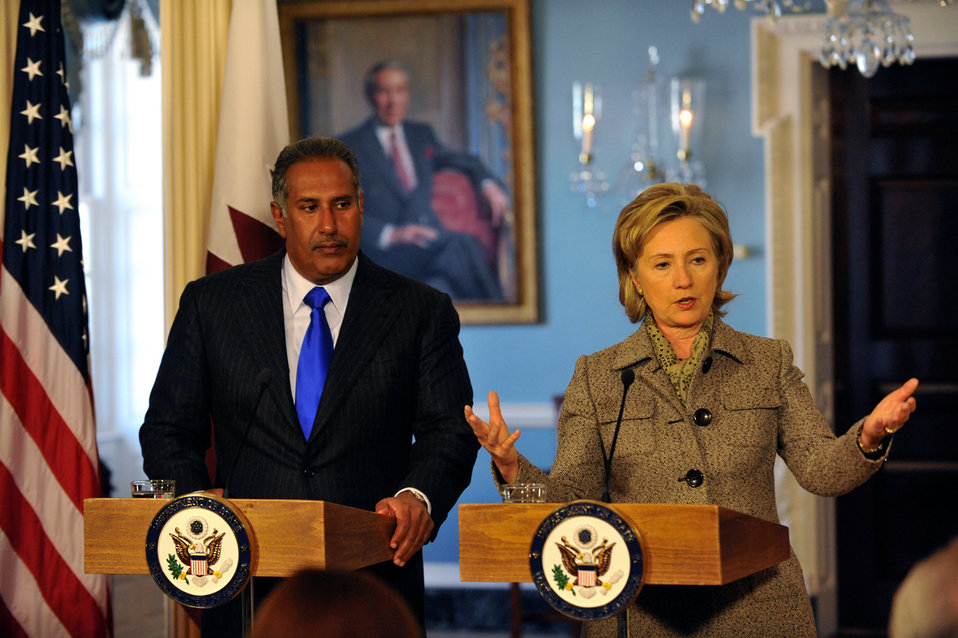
Secretary Clinton Meets With Qatar Foreign Minister

U.S. Secretary of State Hillary Rodham Clinton meets with Qatar Foreign Minister Sheikh Hamad Bin Jassim Bin Jabr Al-Thani at the U.S. Department of State in Washington, DC January 4, 2010.